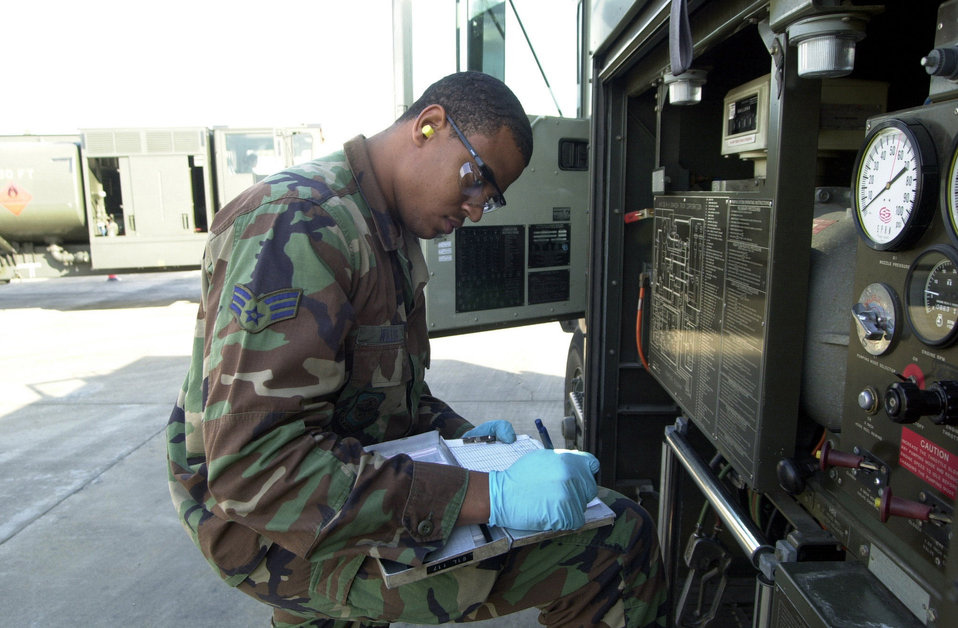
Fuel sample

NAVAL AIR STATION SIGONELLA, Italy -- Senior Airman Sean Willis, a fuels specialist from the 375th Logistics Support Squadron at Scott Air Force Base, Ill., takes fuel samples for testing at Naval Air Station, Sigonella, Italy, on Nov.3, 2001. U.S. Air Force members are deployed to NAS Sigonella in support of Operation Enduring Freedom.